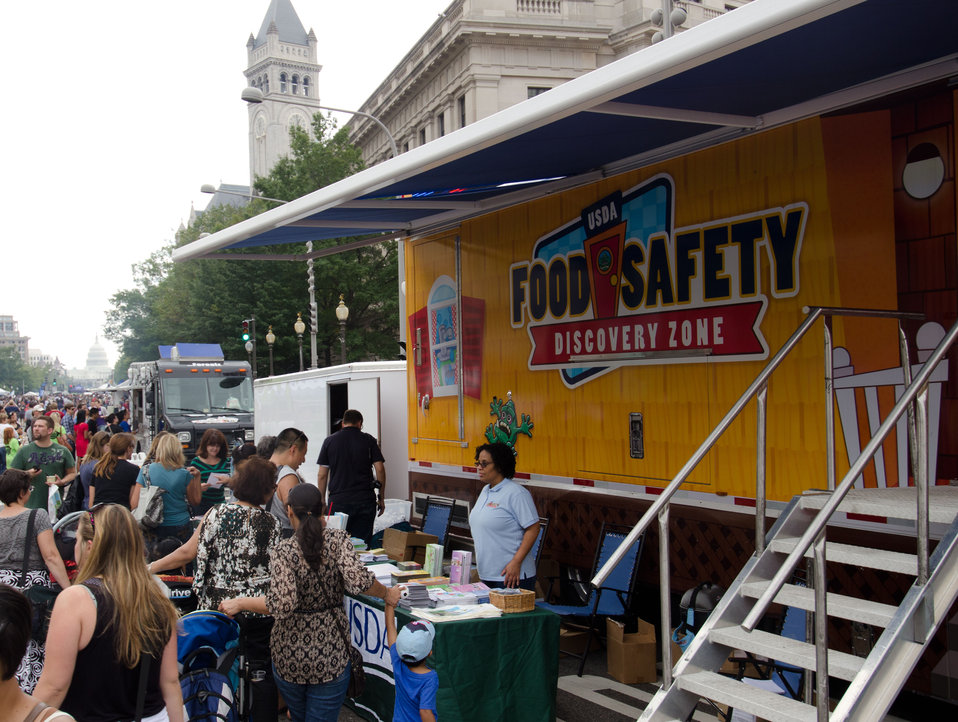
Agriculture’s mobile Discovery Zone is a hands-on vehicle that travels the nation educating children and parents about the four main principals of home food safety – clean, separate, cook and chill, at the Taste of D.C., event that highlights more than 70 eateries, 30 specialty beer providers, the United Service Organization (USO) Metropolitan Washington, and live bands. It is anticipated that more than 500,000 people will attend over the course of the three-day event, which extends from the White House to the Capitol, along Pennsylvania Ave. in Washington D.C. on Saturday, October 6, 2012. Agriculture Food Safety and Inspection Service specialists present talks and cooking demonstrations.